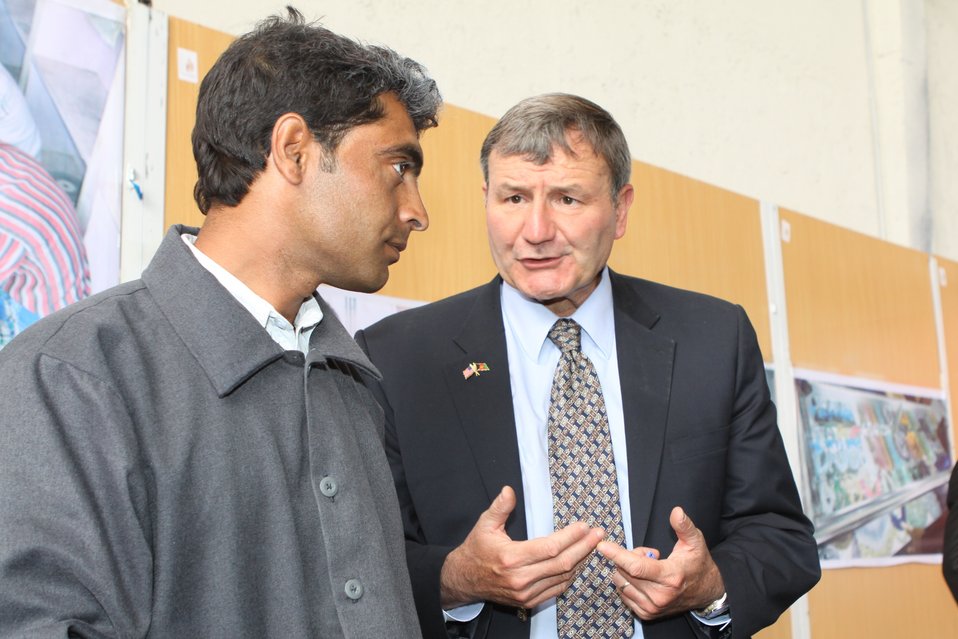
100525 Hirat Marble Conference 535